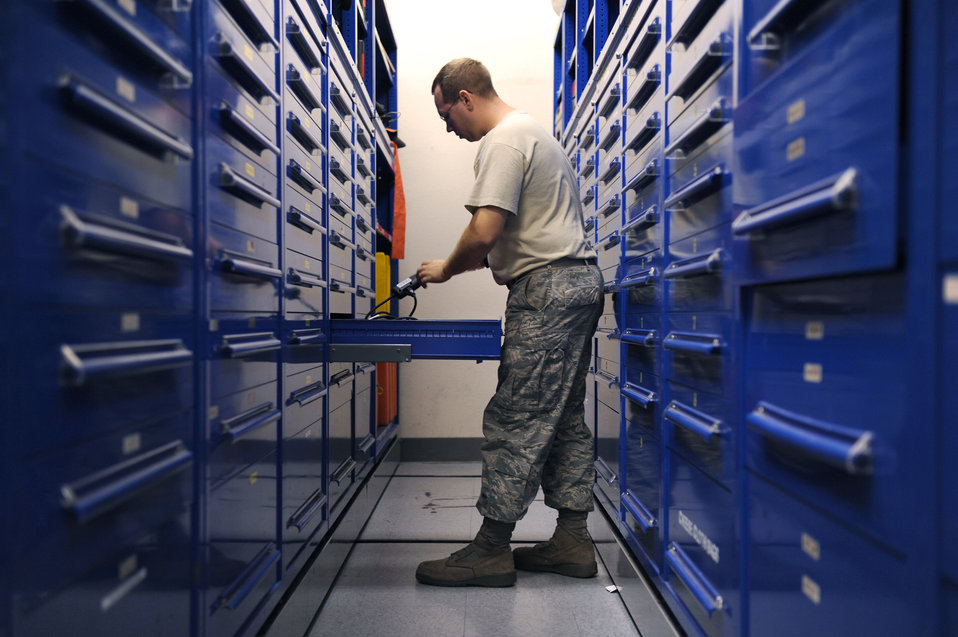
Looking for the right tool

Staff Sgt. Robert Wilson reaches for a tool in the consolidated tool crib at Joint Base Pearl Harbor-Hickam, Hawaii, Oct. 22, 2010.The consolidated tool shop is made up of Airmen in the 15th Aircraft Maintenance and 735th Air Mobility squadrons. Sergeant Wilson is a consolidated tool kit technician with the 735th Air Mobility Squadron.